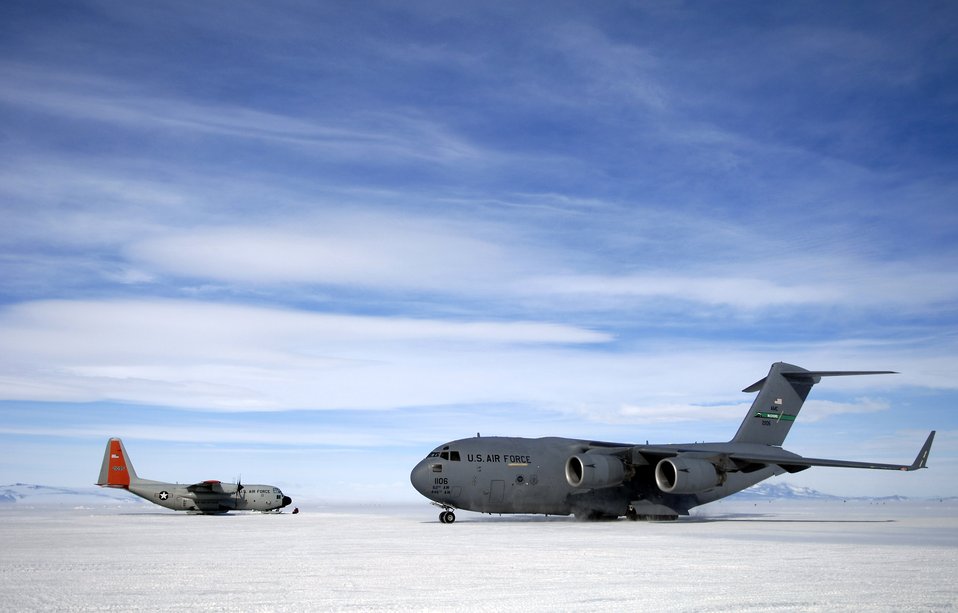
Operation Deep Freeze main season underway

A C-17 Globemaster III taxis to its parking spot Nov. 27 on the ice runway at McMurdo Station, Antarctica, during Operation Deep Freeze. C-17s fly large cargo loads from Christchurch New Zealand to Antarctica while the LC-130 Hercules, stationed at McMurdo, fly smaller cargo loads to research posts throughout the continent. The C-17s from McChord Air Force Base, Wash., and ski-equipped LC-130s from the New York Air National Guard's 109th Airlift Wing are supporting the 13th Air Force-led Joint Task Force Support Forces Antarctica operation.